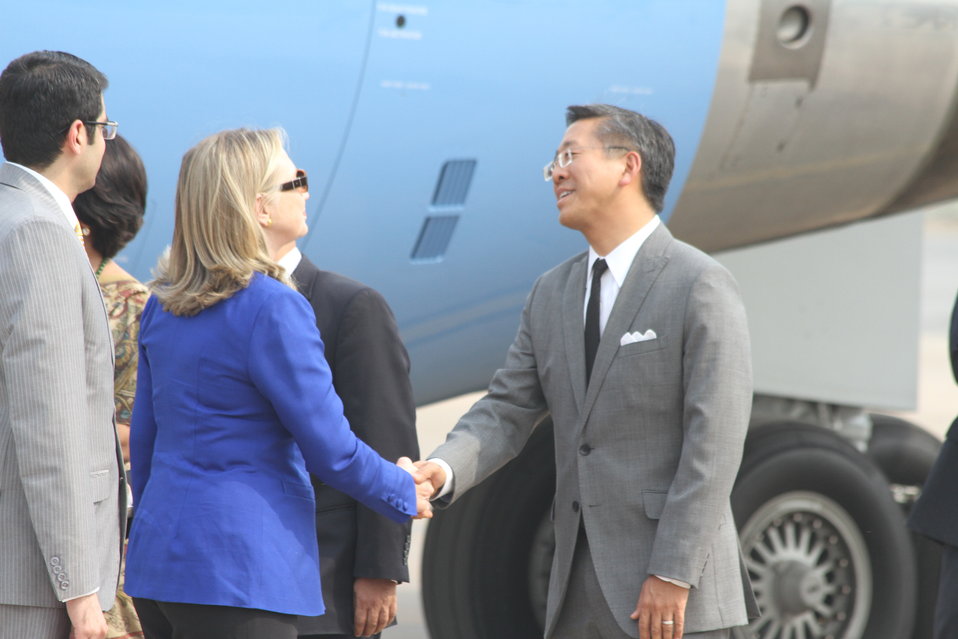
Secretary Clinton Is Greeted By Deputy Chief of Mission Lu

U.S. Secretary of State Hillary Rodham Clinton is greeted by U.S. Deputy Chief of Mission Don Lu upon her arrival to New Delhi, India, on May 7, 2012.